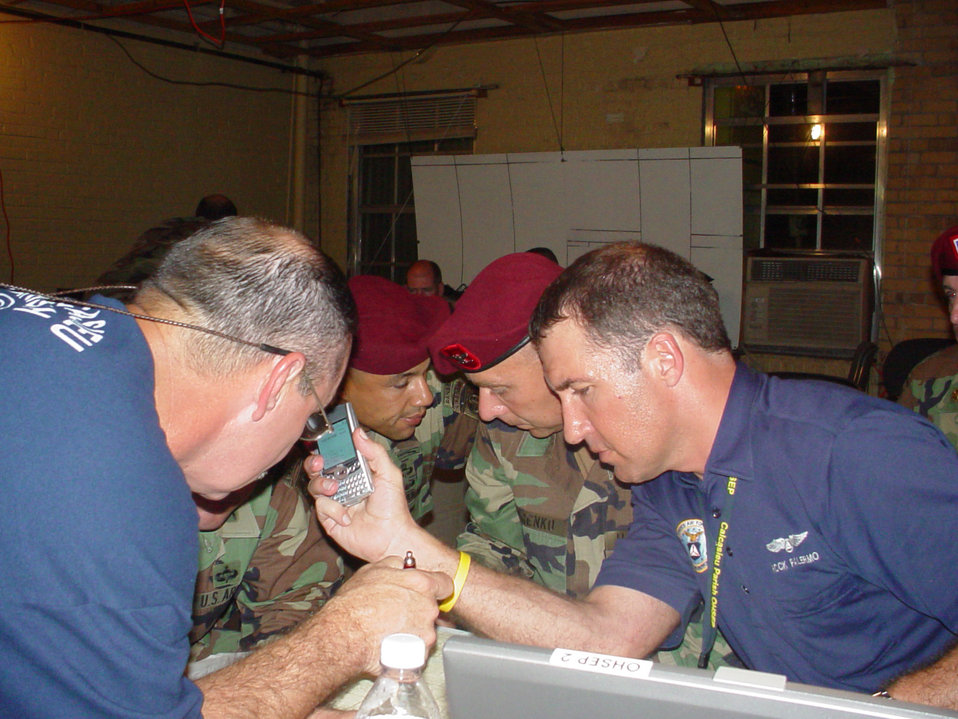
CAP helps hurricane relief efforts

Civil Air Patrol Col. Rock Palermo, right, and members of the 82nd Airborne, participate in a conference call with the National Weather Service as Hurricane Rita makes landfall. After Hurricane Rita, Colonel Palermo spent nearly three weeks directing local emergency operations in his hometown of Lake Charles. He was drafted as operations section chief and later deputy director because of his past disaster management experience.